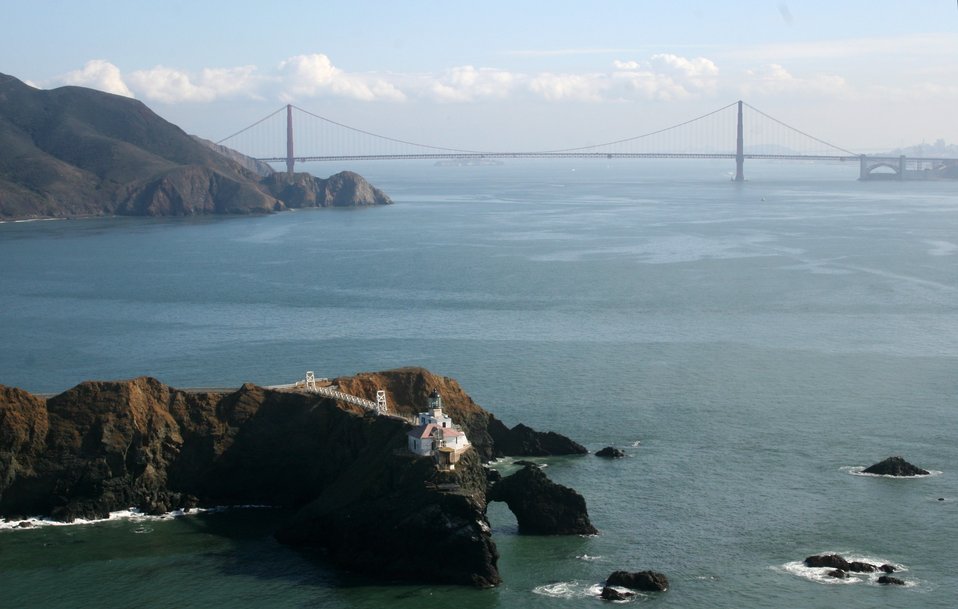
A magnificent view of the Point Bonita Lighthouse with the Golden Gate Bridge in the background.